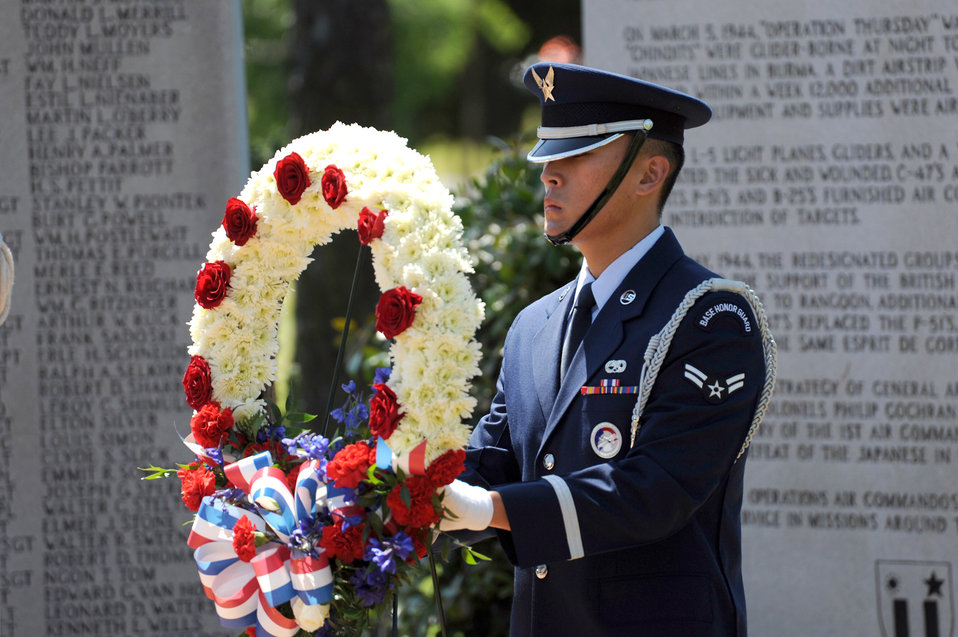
Airmen honor the fallen

An Airman assigned to the Hurlburt Field, Fla., honor guard team presents a wreath during a ceremony April 29, 2010, honoring the 30th anniversary of Operation Eagle Claw.